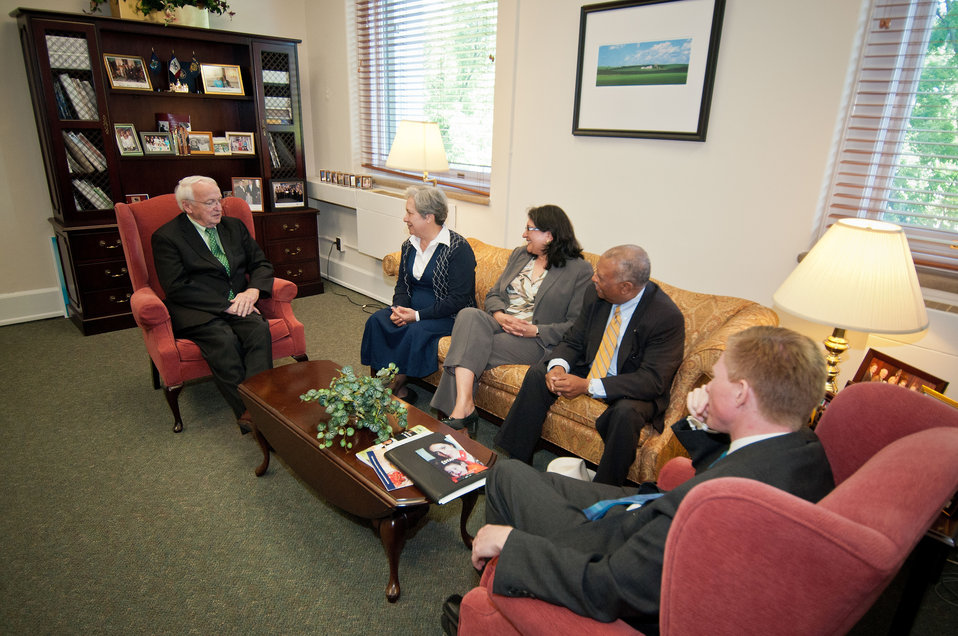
From left: Kevin Concannon, Under Secretary, Food Nutrition and Consumer Services, Sister Norma Pimentel, Catholic Charities, Roxanne Barillas, Special Assistant to Max Finberg, Ronald Jackson, Senior Director-Government Affairs, Catholic Charities and Max Finberg, Director, Faith Based and Neighborhood Partnerships met at the United States Department of Agriculture, Friday, May 11, 2012 to discuss efforts of Catholic Charities in nutrition programs.